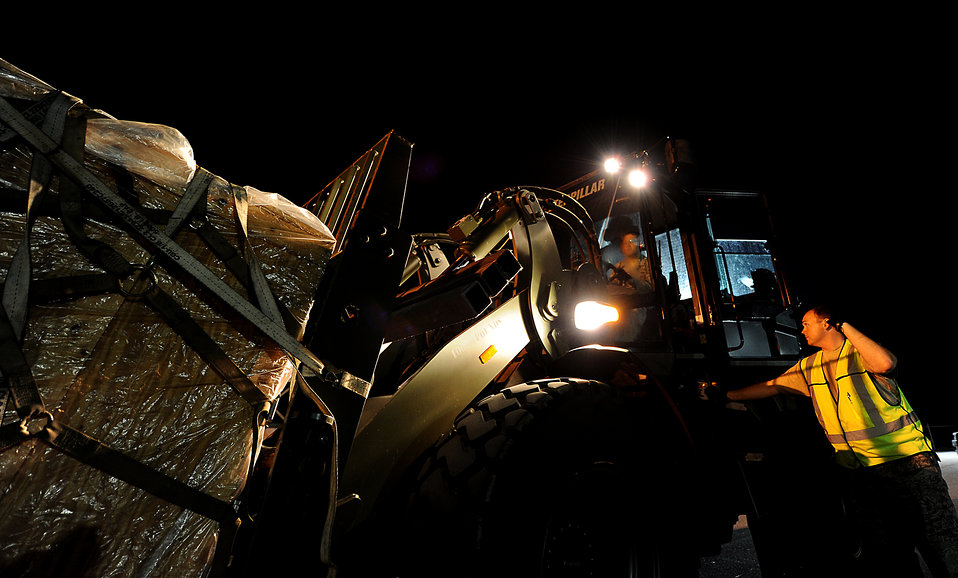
Night driving

Staff Sgt. John Martz directs a forklift Oct. 24, 2011, at Kadena Air Base, Japan, during Exercise Beverly High 12-1. The exercise hones Airmen’s skills and readies them to respond to real-world emergencies. Martz is an air transportation craftsman assigned to the 18th Logistics Readiness Squadron at Kadena AB.